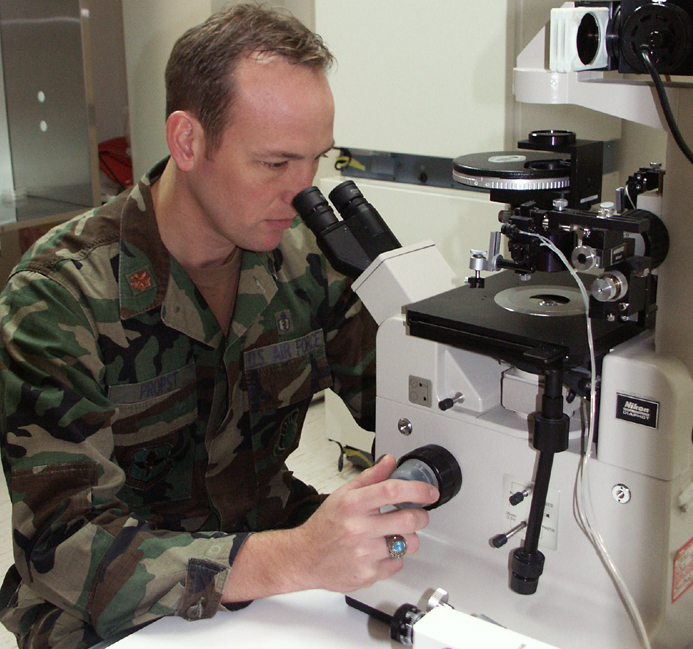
Program helps couples have a baby

LACKLAND AIR FORCE BASE, Texas -- Maj. (Dr.) Anthony Propst adjusts a microscope used to evaluate embryos and to inject the eggs with sperm. Wilford Hall Medical Center's in vitro fertilization program at Lackland Air Force Base, Texas, is helping military couples realize their dreams of having a family.